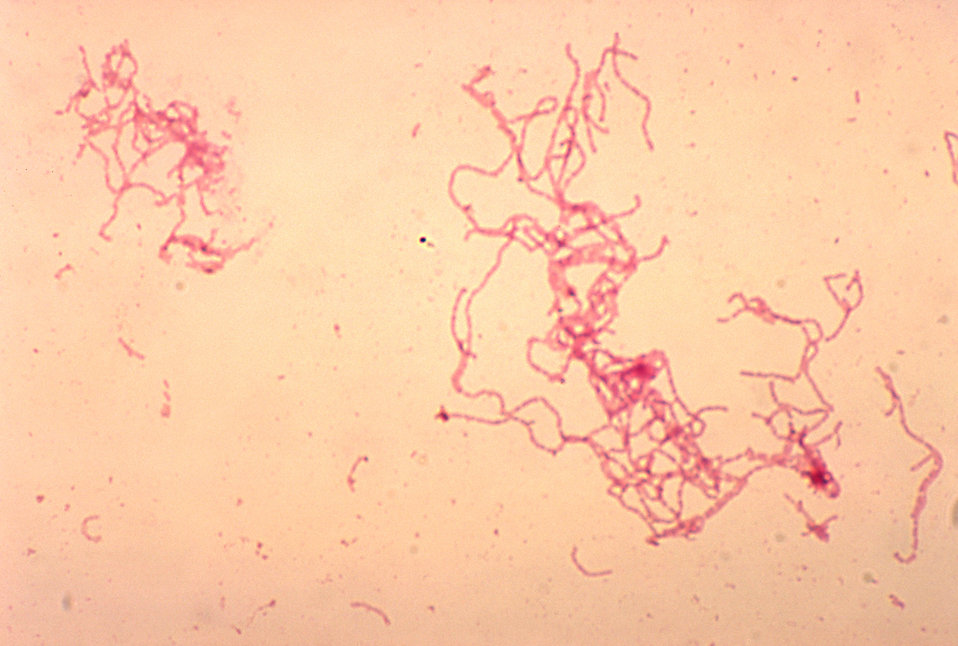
A rabbit blood culture photomicrograph of Haemophilus ducreyi bacteria using Gram-stain technique.